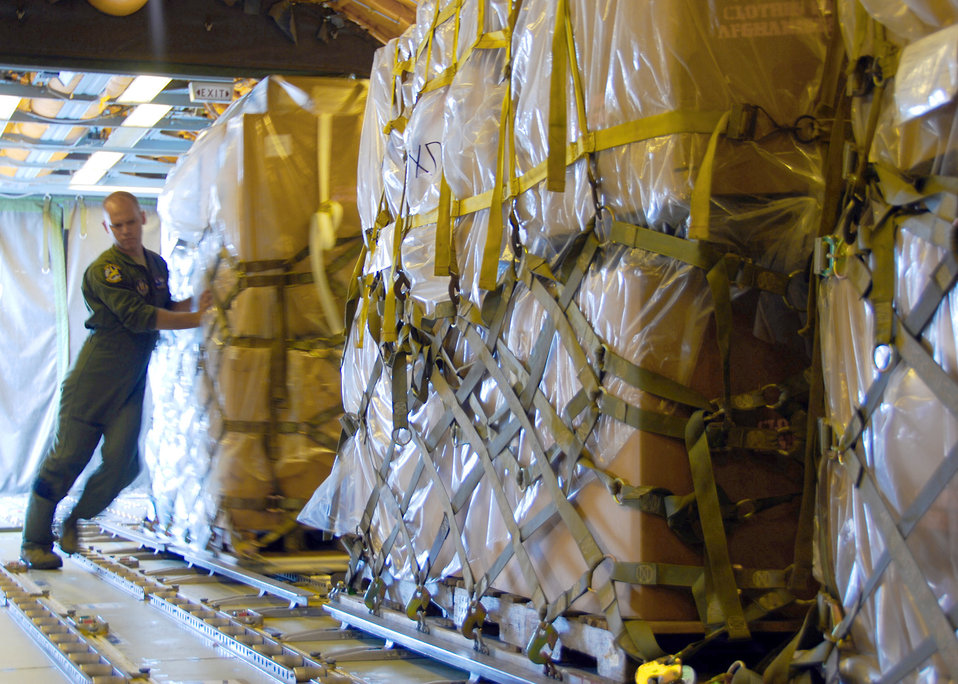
KC-10 crew performs humanitarion mission

First Lt. Christopher McMenamy helps load humanitarian cargo onto a KC-10 Extender Sept. 2, 2010, at Joint Base McGuire-Dix-Lakehurst, N.J. The humanitarian cargo consisted of winter clothing, shoes and blankets that will be distributed to villages and orphanages near Kabul, Afghanistan. Lieutenant McMenamy is a KC-10 pilot from the 76th Air Refueling Squadron.